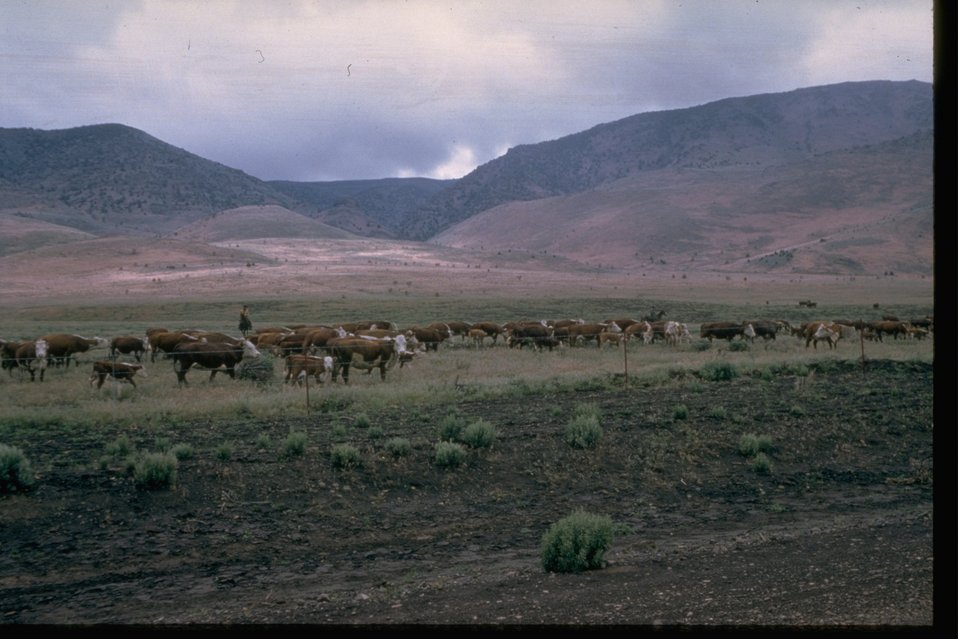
Cattle being herded by cowboys on horseback. Fence in the foreground.